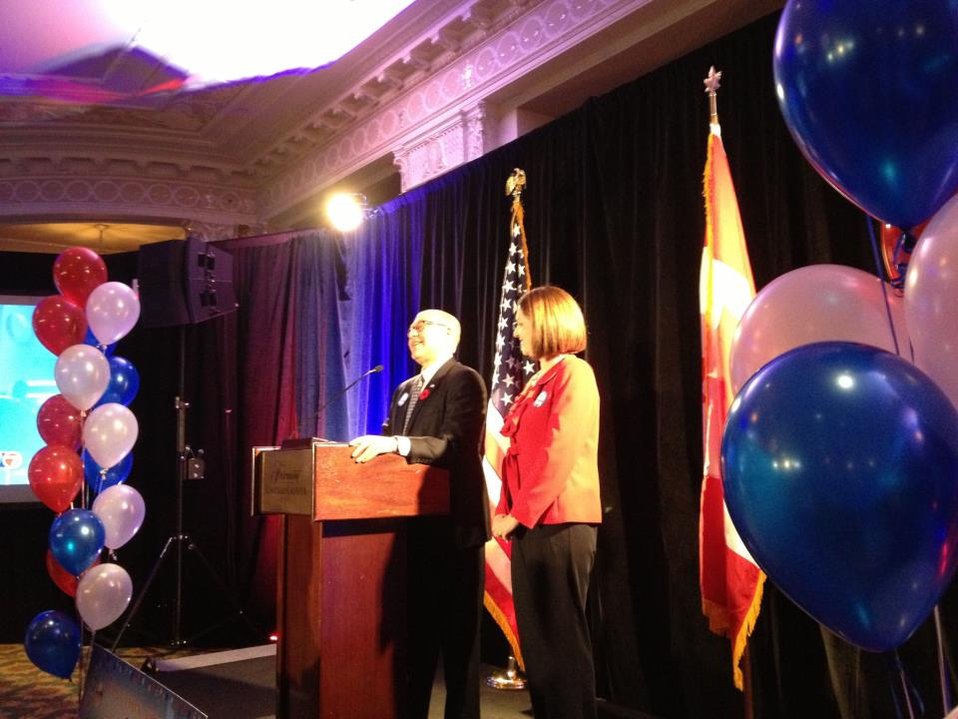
Ambassador Jacobson Speaks at Embassy Ottawa's 2012 Election Night Event

U.S. Ambassador to Canada David Jacobson speaks at the U.S. Embassy in Ottawa, Canada's 2012 Election Night event at the at the Chateau Laurier in Ottawa, November 6, 2012.